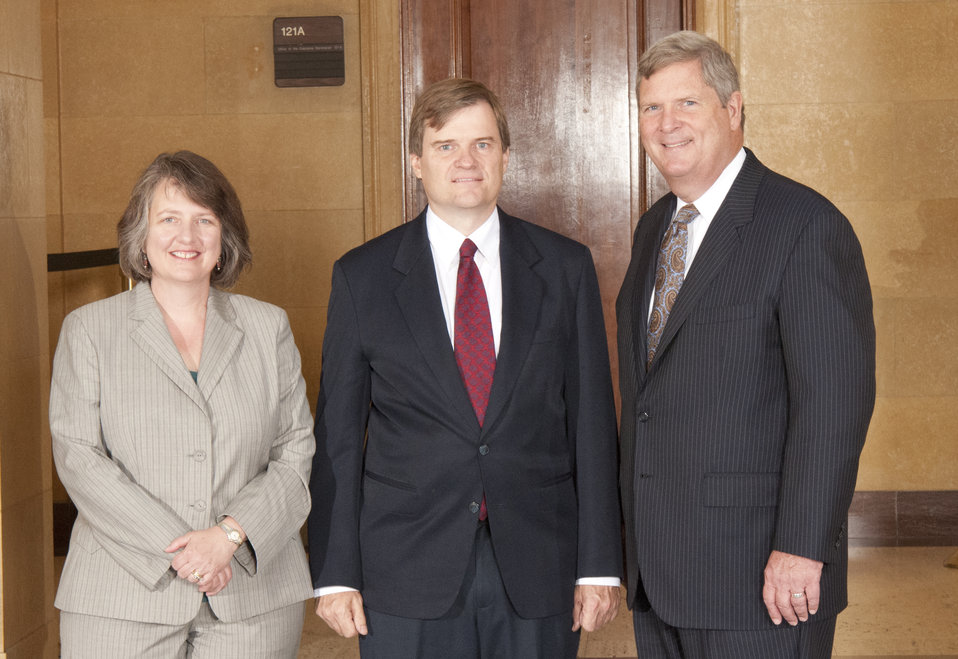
Agriculture Secretary Tom Vilsack and Deputy Agriculture Secretary Kathleen Merrigan with Keith Fuglie, Economic Research Service (ERS) on the patio of the U.S. Department of Agriculture in Washington, D.C. on Wednesday, Sept. 12, 2012.